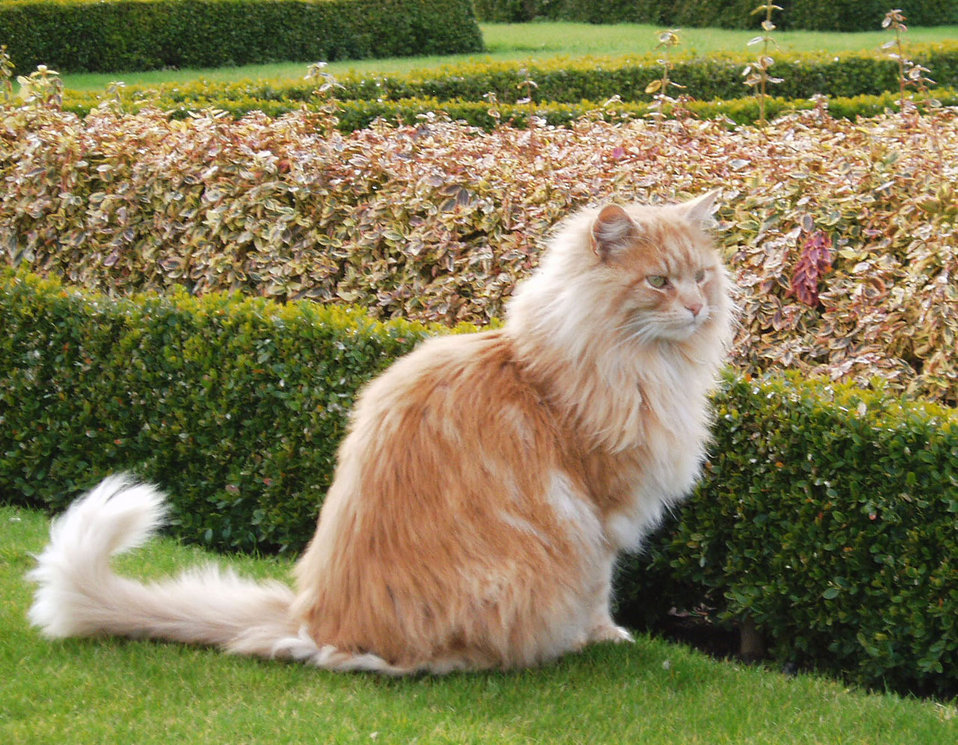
Cat

The cat at wimpole hall cambs..